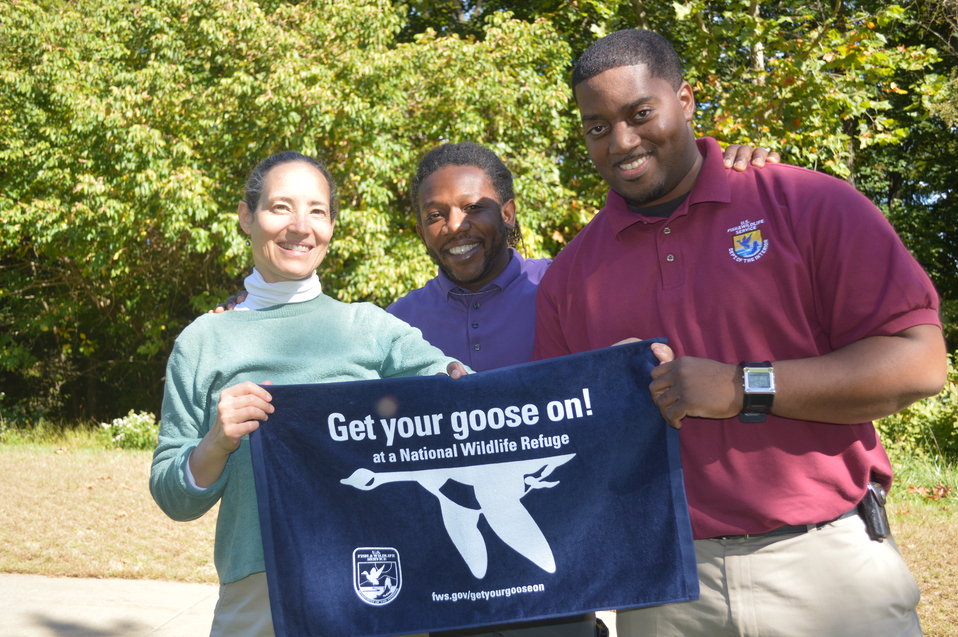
Get Your Goose On!

Photo taken at the National Conservation Training Center in Shepherdstown, WV.

Credit: Ryan Moehring / USFWS

#GetYourGooseOn